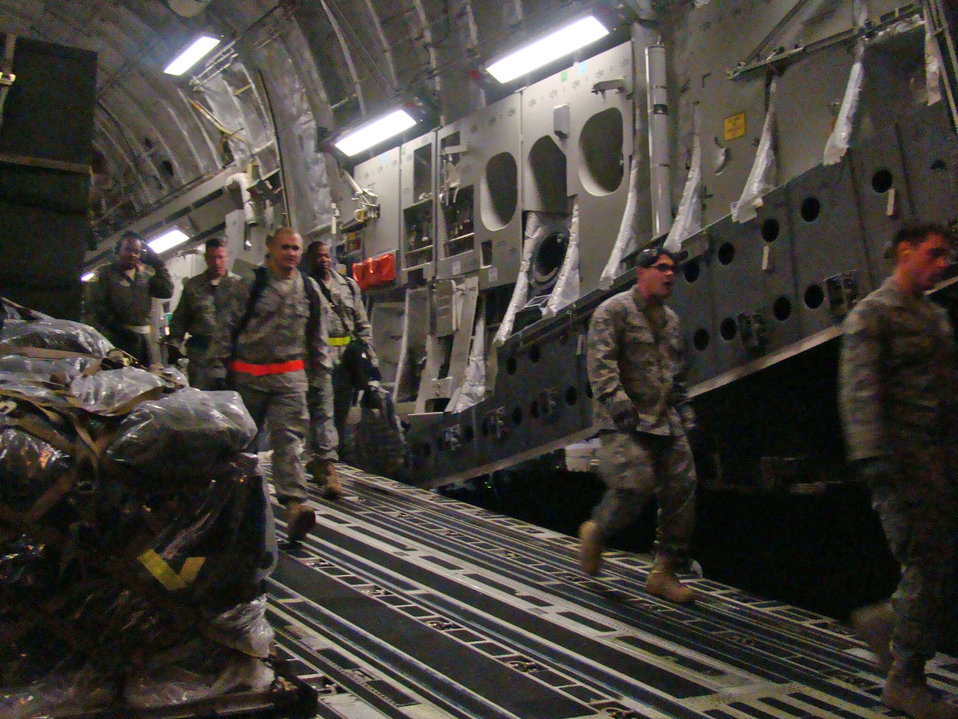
Aircrews deliver relief supplies to Haiti

Members of the 621st Contingency Response Wing step down a C-17 Globemaster III cargo hatch Jan. 14, 2010, at the Toussaint L'Ouverture International Airport, Haiti. The 21 passengers and 44 tons of cargo were sent to Haiti on a 305th Air Mobility Wing C-17 from Joint Base McGuire-Dix-Lakehurst, N.J., to support relief operations in response to a devastating earthquake in the area.